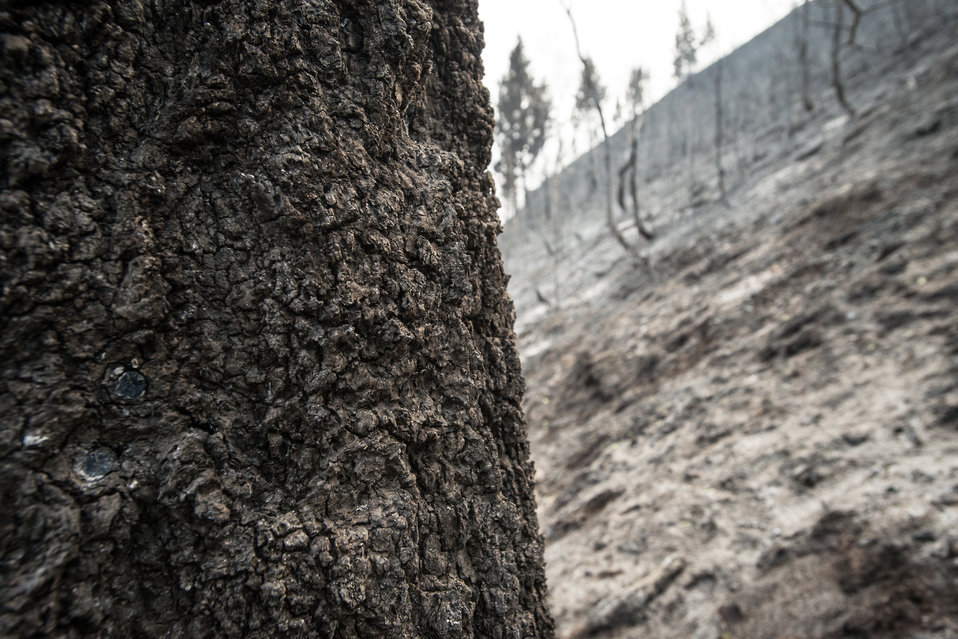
Fire has left the bark of this tree an ashen form of the once untouched bark, during the Beaver Creek Fire, west of Hailey, ID, in the residential interface with U.S. Department of Agriculture (USDA) Forest Service (FS) and Sawtooth National Forest and Bureau of Land Management (BLM) on Wednesday, Aug 21, 2013.